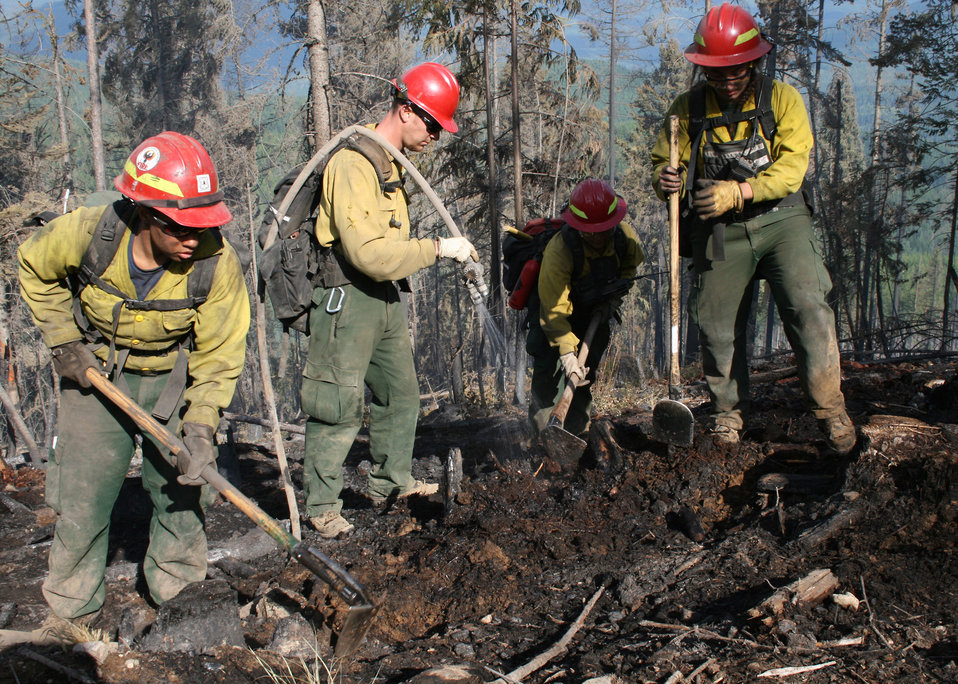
Firefighters supported by three fire engines, two helicopters, two water tenders, a dozer and an air tanker battled to contain the 90 acre Rogers Fire located on Mt. Rogers five miles west of Aladdin, WA on the Colville National Forest. Firefighters worked under adverse conditions with steep terrain and gusting winds to reduce the loss of timber and protect the Rogers Mountain Trail. The Rogers Fire began on Aug. 9, 2011 and was controlled by Aug. 19, 2011 with mop up crews ensuring that no flare-ups occurred. Colville National Forest has 1.1 million acres in northeastern Washington and includes the Kettle River, Selkirk Mountain ranges, and the upper reaches of the Columbia River.